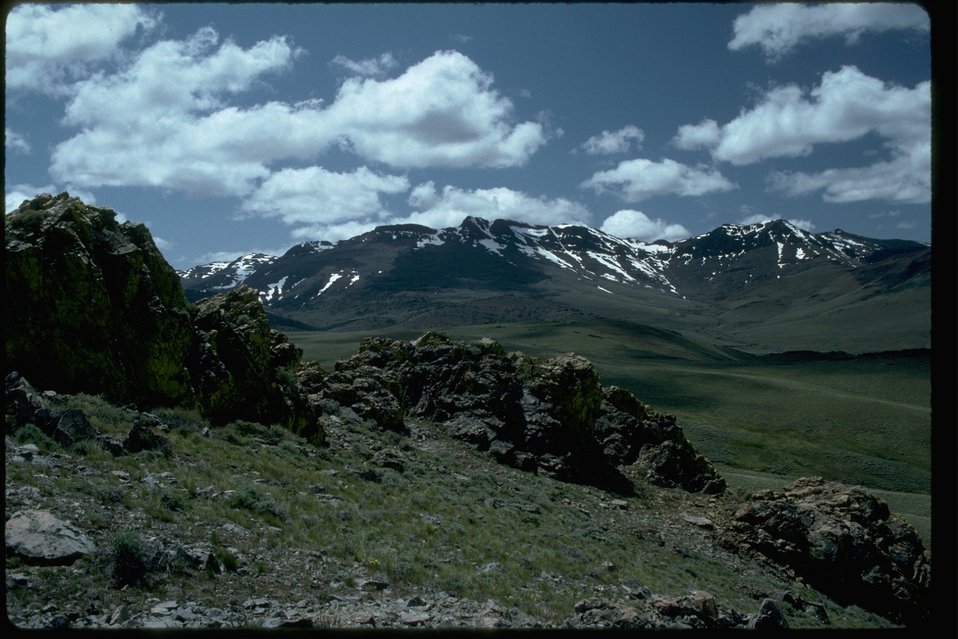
High Country--Pueblo Mountains to the south of Fields, Oregon.